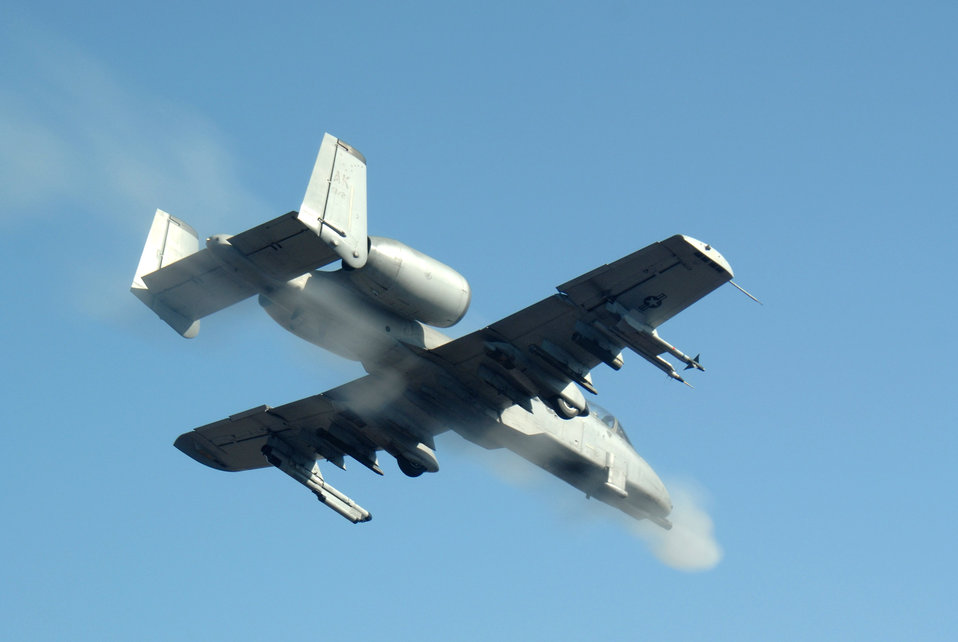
Oct. 9 airpower summary: A-10 engages anti-Afghan forces

An A-10 Thunderbolt II flies a combat mission over Afghanistan in support of Operation Enduring Freedom. A-10s provides close-air support and can employ a wide variety of conventional munitions.